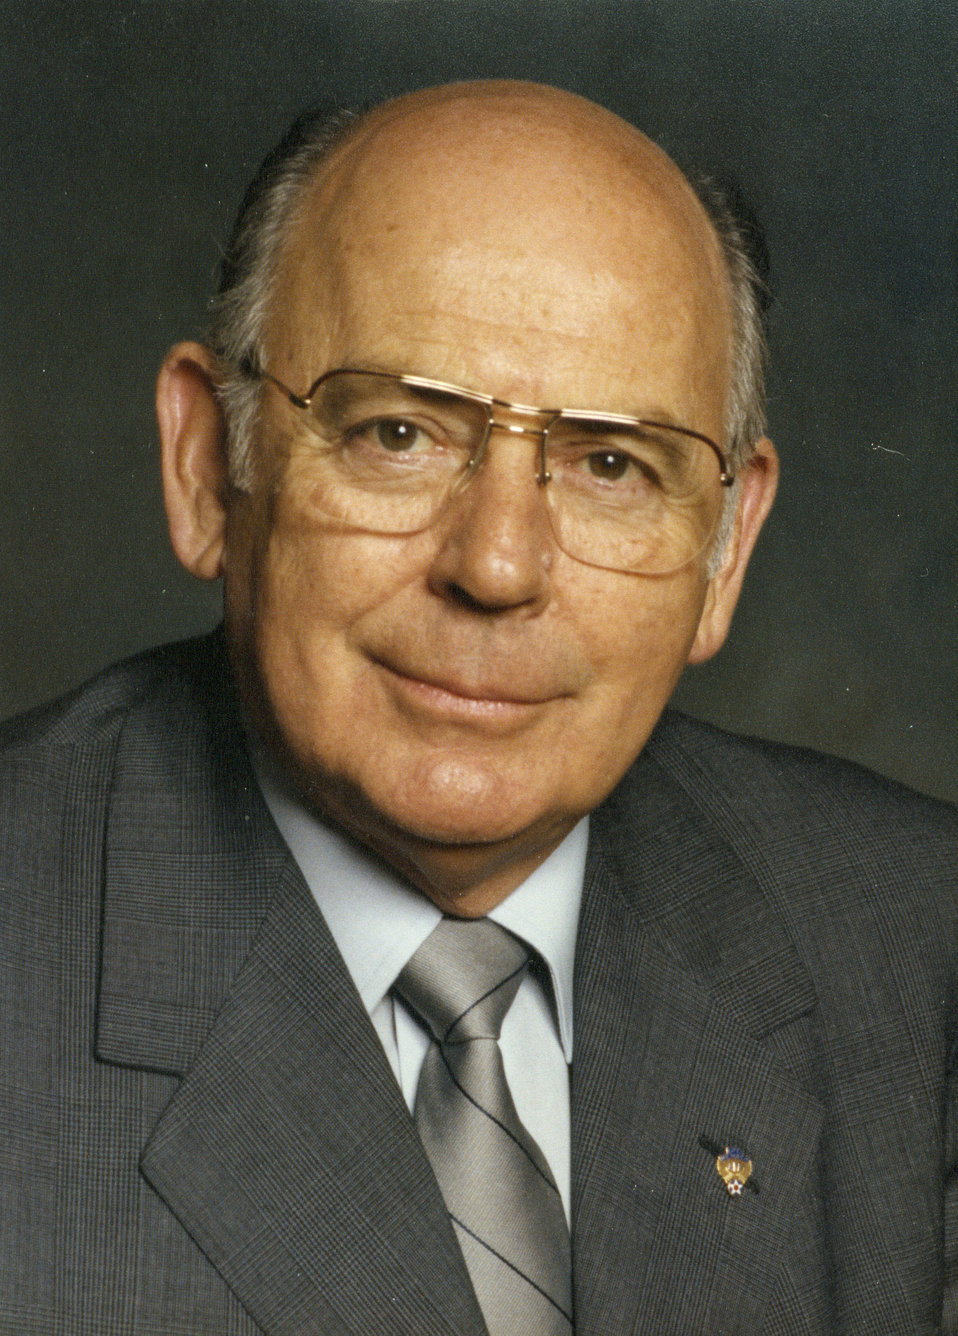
Former SAC commander General Dougherty dies

Retired Gen. Russell E. Dougherty died Sept. 7 at his home in Potomac Falls, Va. His last assignment was commander in chief of Strategic Air Command. He also served as executive director of the Air Force Association from 1980 to 1986.